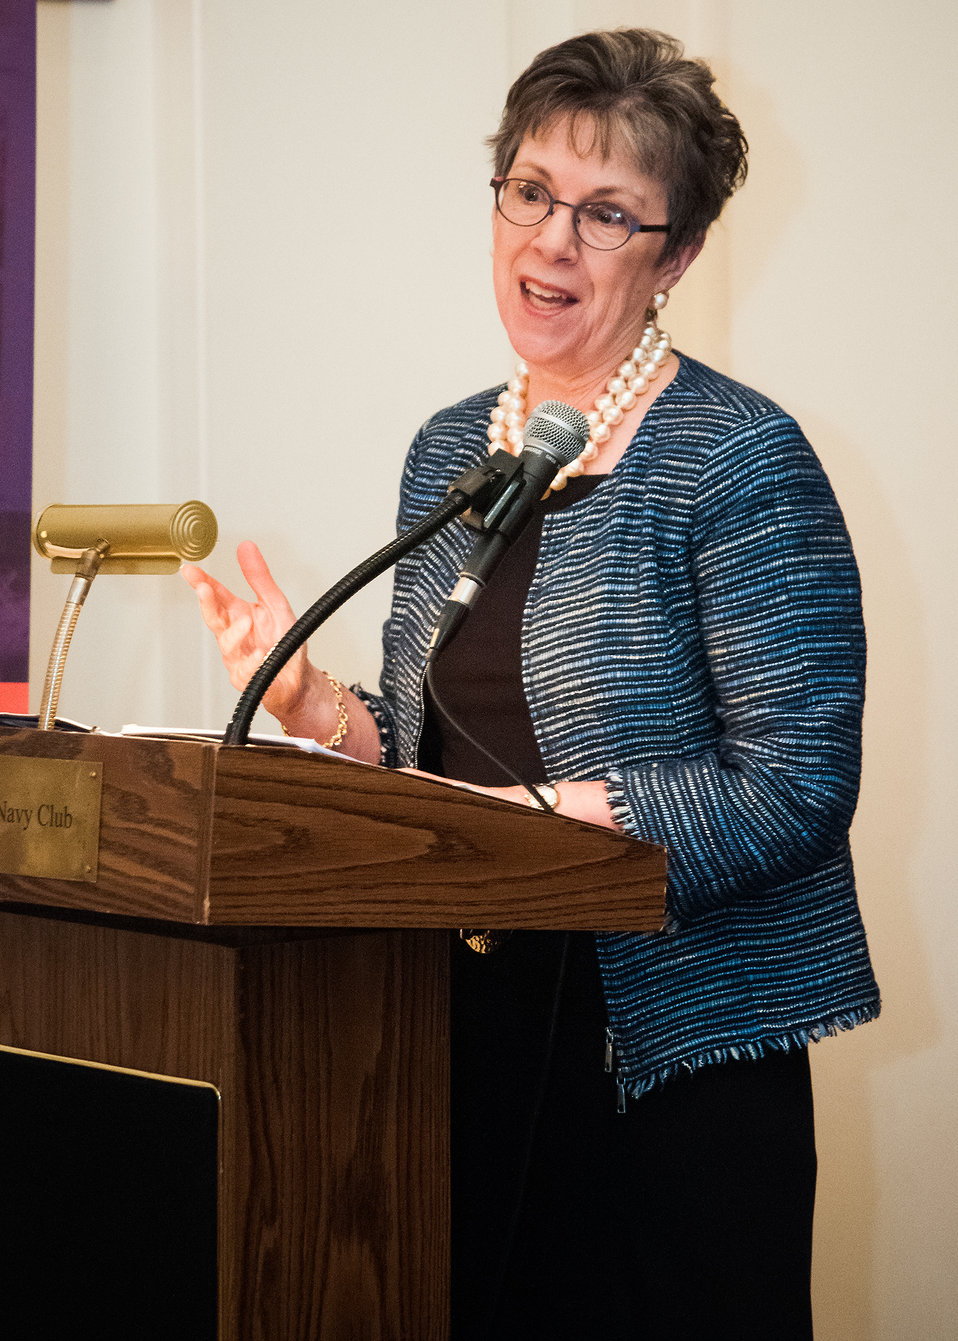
Under Secretary Dr. Catherine Woteki, Research, Education, and Economics and Chief Scientist gave remarks at the United States Department of Agriculture/Department of Defense joint launch event for the 'How to Help Military and Veteran Families' - a series of publications produced jointly by the USDA National Institute of Food and Agriculture (NIFA) and DoD at the Army-Navy Club in Washington, DC, Monday, April 15, 2013.